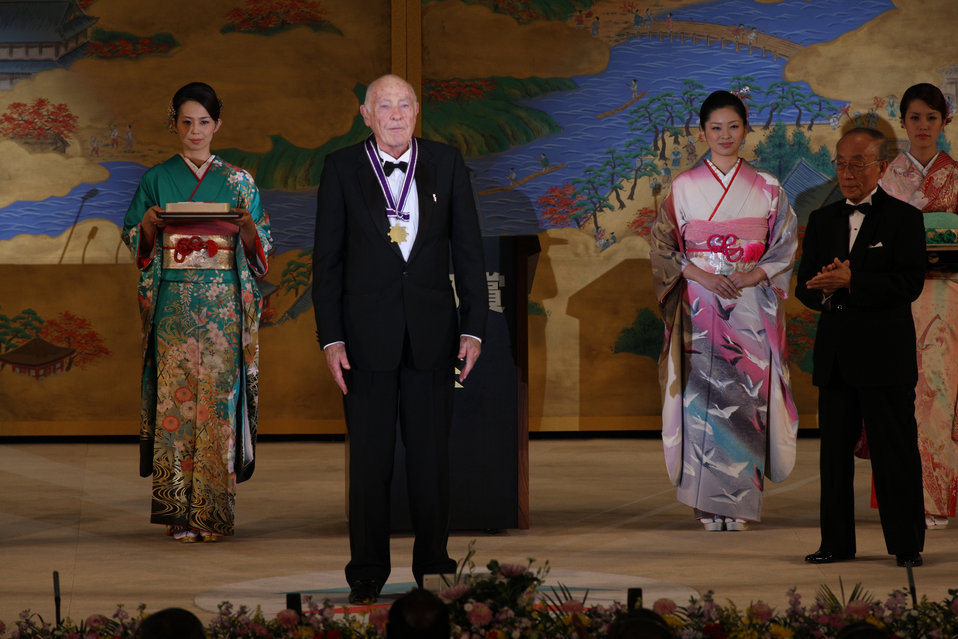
NIST's John Cahn Receives Kyoto Prize